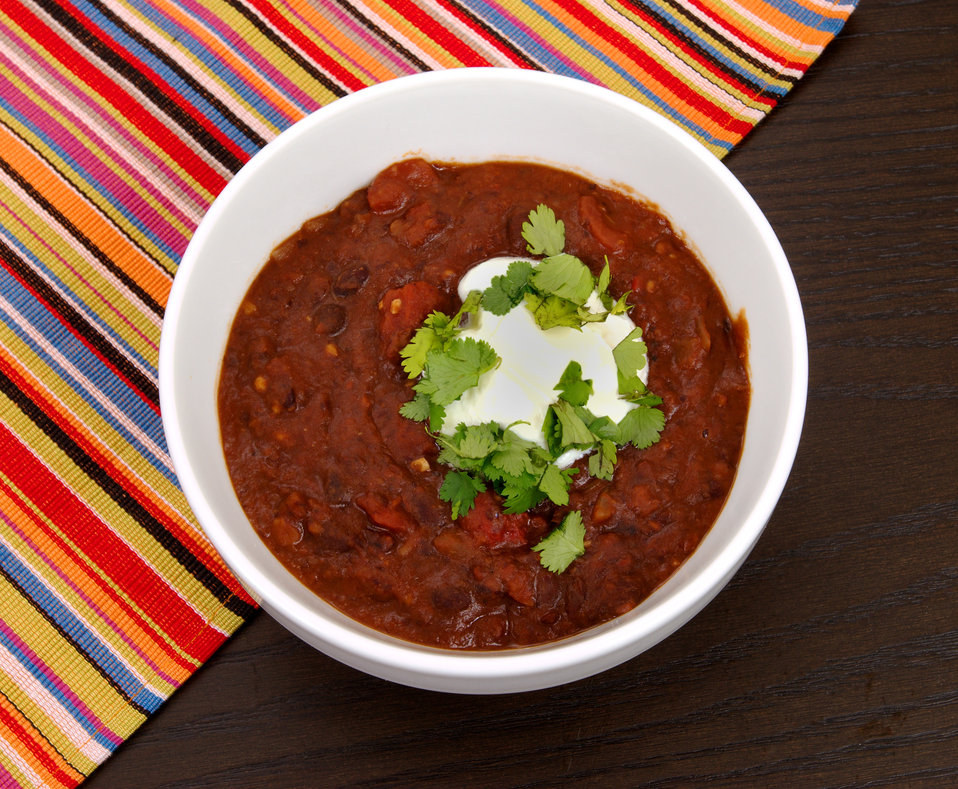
This image depicts a bowl of Black Bean and Corn Soup, which had been topped with a dollop of fat-free sour cream, and cilantro leaves. The soup's ingredients included black beans, stewed tomatoes (Mexican-style), low-sodium diced tomatoes, whole kernel corn, green onions, green pepper, celery, chili powder, cumin and garlic. Delicious, and high in protein and antioxidants, this is surely a great choice in a spicy, healthy meal.